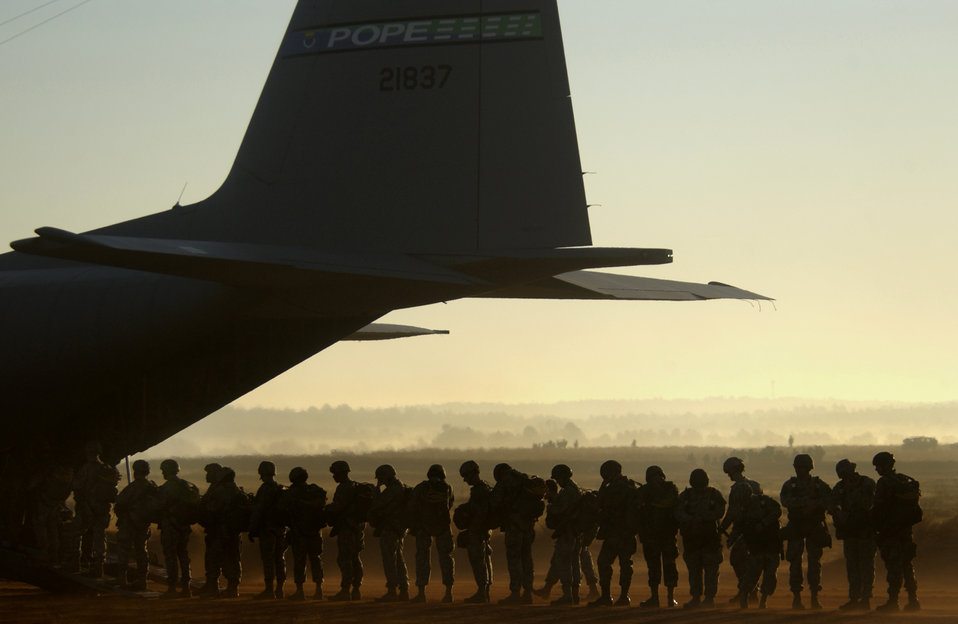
Jumping for toys

Army paratroopers from the 82nd Airborne Division board a C-130 Hercules during the 9th Annual Randy Oler Memorial Operation Toy Drop Dec. 16, at Fort Bragg, N.C. Soldiers participate in the operation by donating a toy in exchange for a chance to make a non-tactical parachute jump with German or Australian jumpmasters.